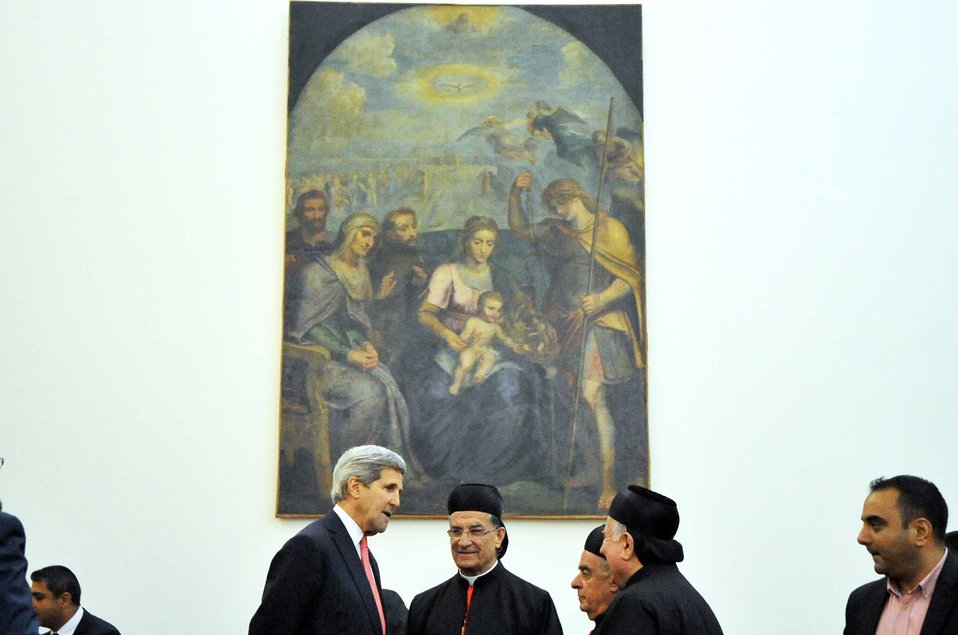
Secretary Kerry Meets With Christian Maronite Patriarch Rai in Beirut

U.S. Secretary of State John Kerry meets with Christian Maronite Patriarch Beshara Rai at the Archdiocese in Beirut, Lebanon, on June 4, 2014.